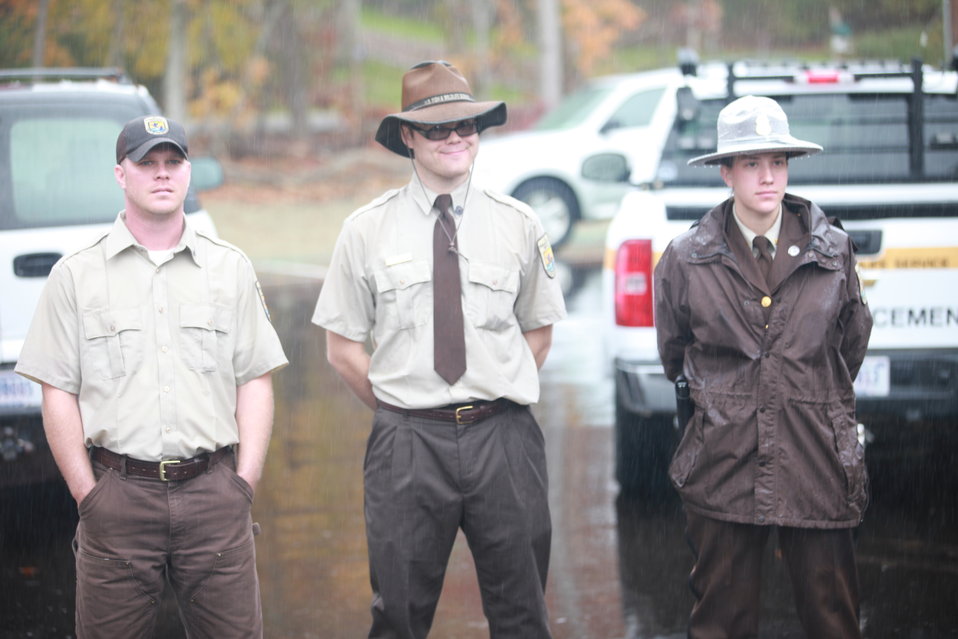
Refuge staff stand in the rain at Visitor Center Opening Event

In spite of the rain, the staff at the Long Island NWR planned and hosted a wonderful Ribbon Cutting Ceremony on November 10, 2011.